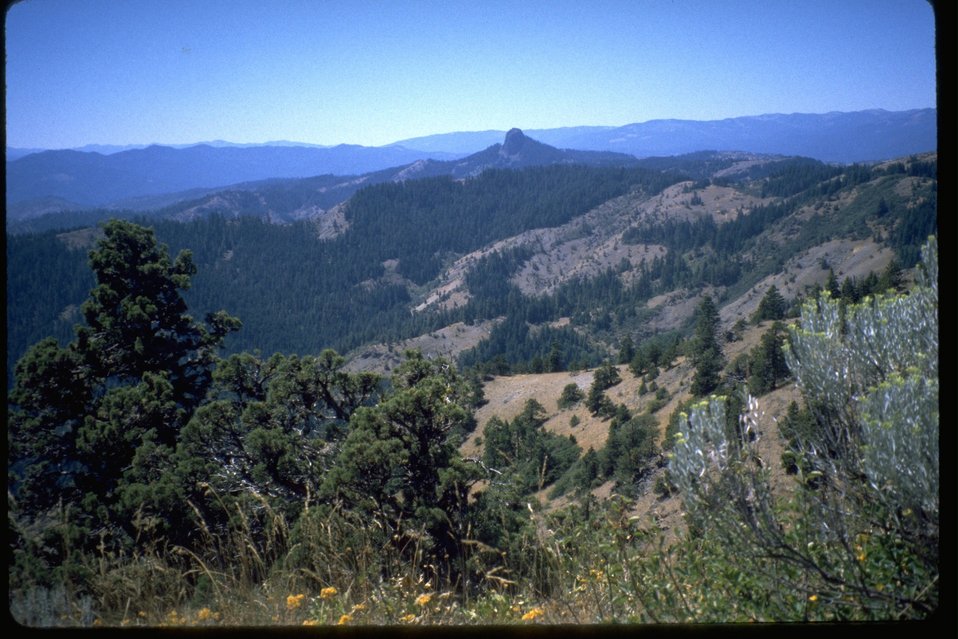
View of Pilot Rock from Boccard Point, Wilderness Study Area.